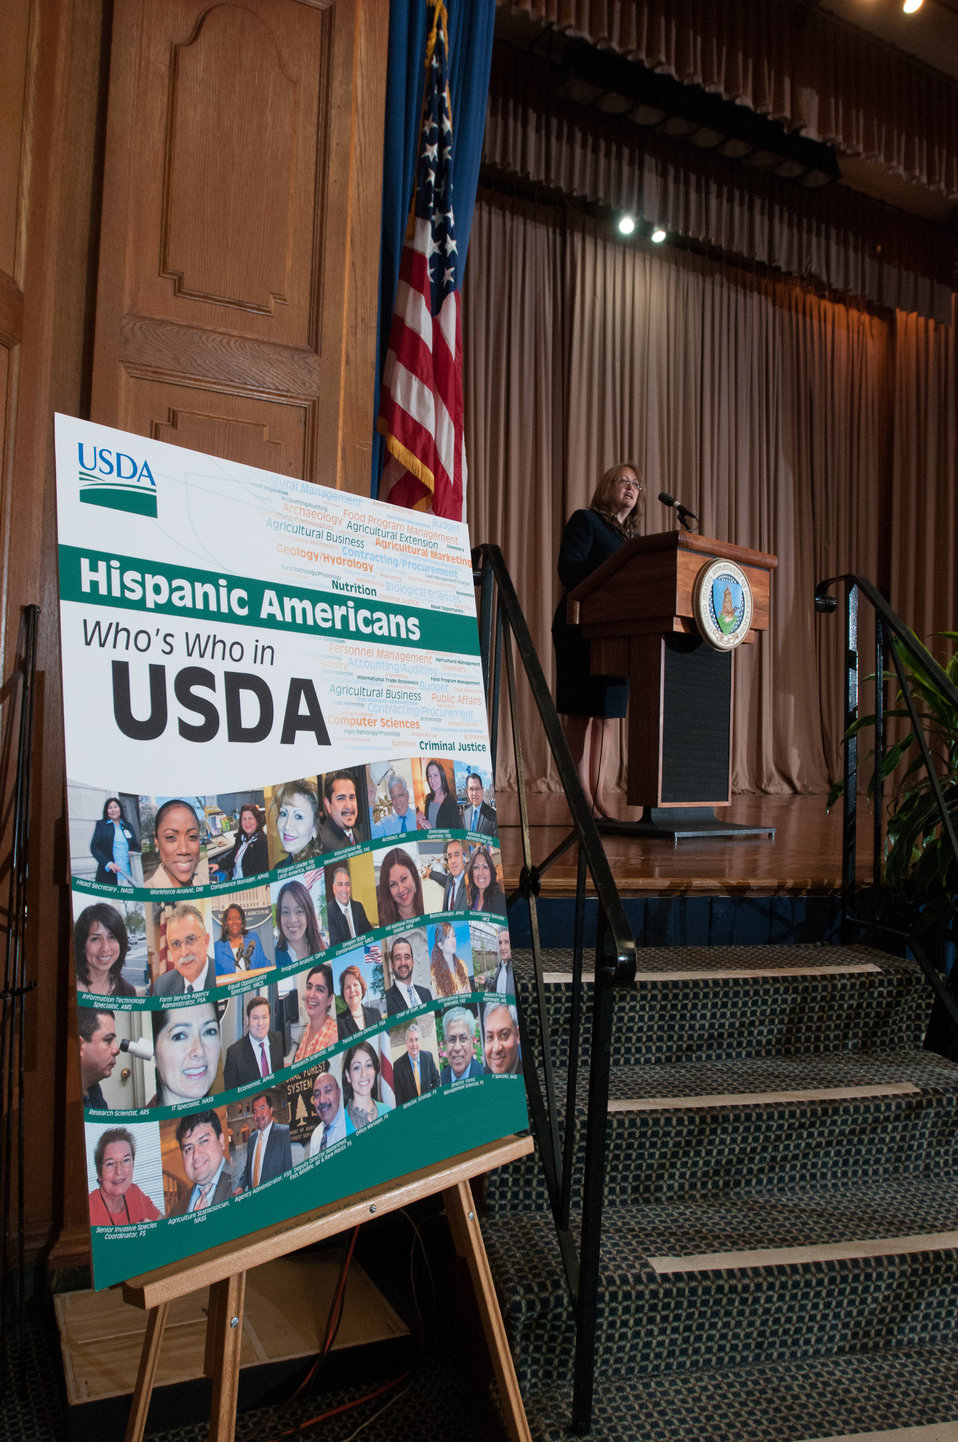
U.S. Department of Agriculture (USDA) Office of Human Resources Management, Employment Program Manager, Diversity and Inclusion Program Manager Jacqueline Padron provided the introduction of the 2013 National Hispanic Heritage Month ”Hispanics: Serving and Leading our Nation with Pride and Honor,” on Thursday, Sept. 19, 2013, in the Jefferson Auditorium, USDA Headquarters, Washington, D.C.